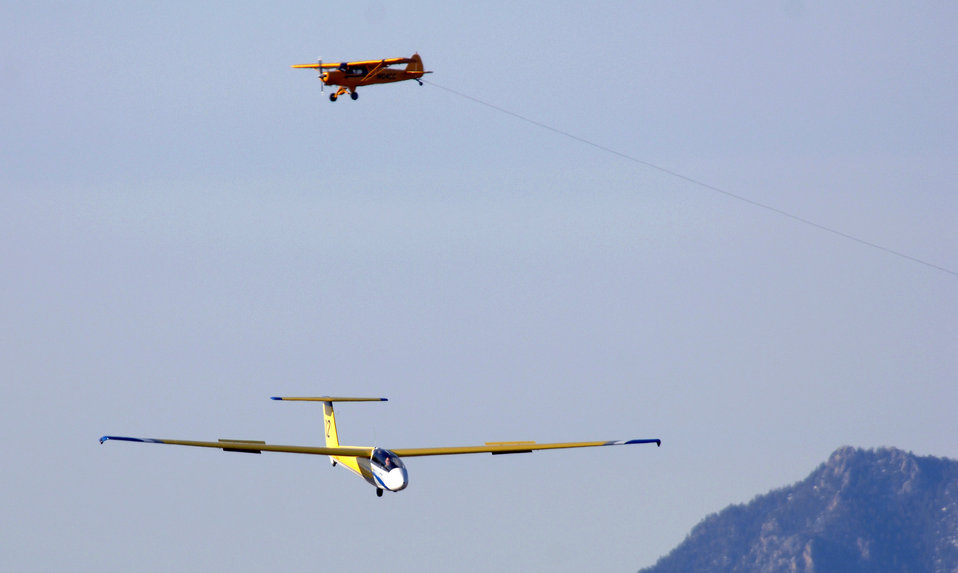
Gliders help future Air Force leaders soar

A TG-10B glider comes in to land as a Piper Super Cub tow plane circles the airfield at the U.S Air Force Academy, Colo. Soaring occurs at the Academy on a year-round basis. The glider mission is to form the foundation of cadet exposure to military aviation, build character and help motivate cadets toward a career in the United States Air Force.